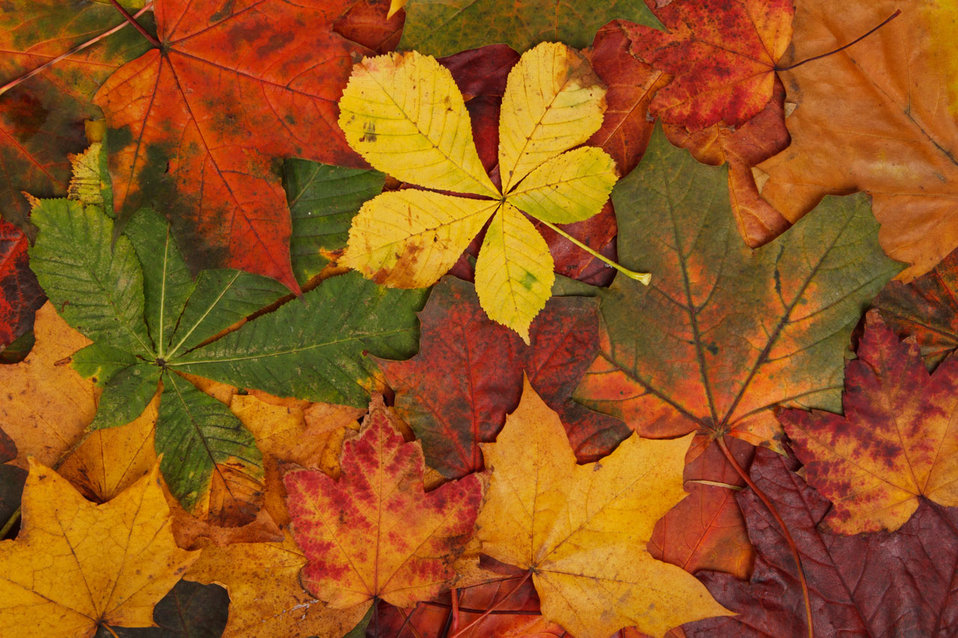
Colorful autumn leaves

Colorful autumn leaf background image.